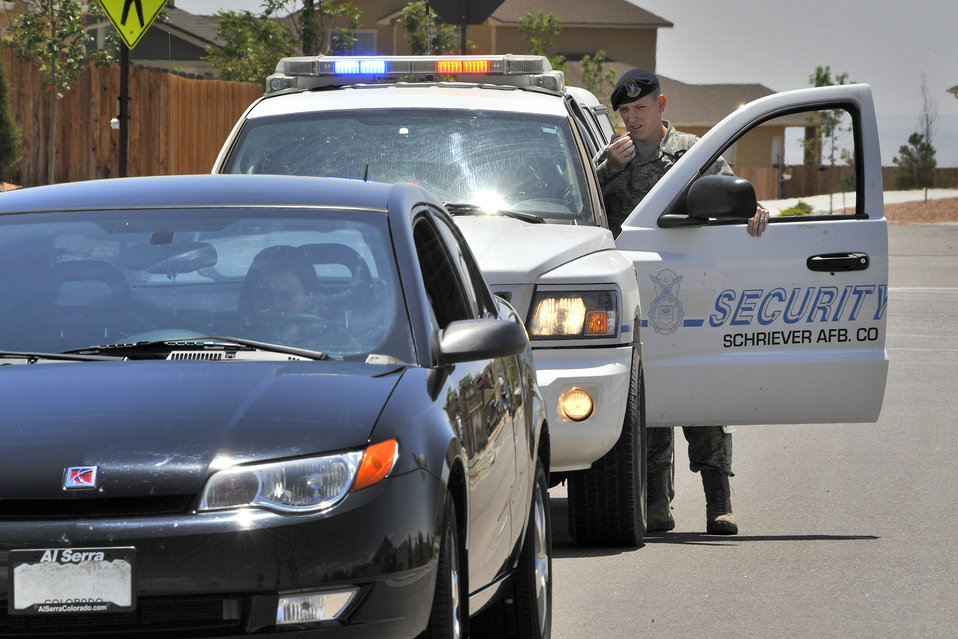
Schriever SFS training

Airman 1st Class Andrew Poirier makes a simulated traffic stop while demonstrating the squadron's law enforcement capabilities June 15, 2011, at Schriever Air Force Base, Colo. The squadron conducts scheduled exercises to provide training opportunities for its members. Airman Poirier is a 50th Security Forces Squadron patrolman.